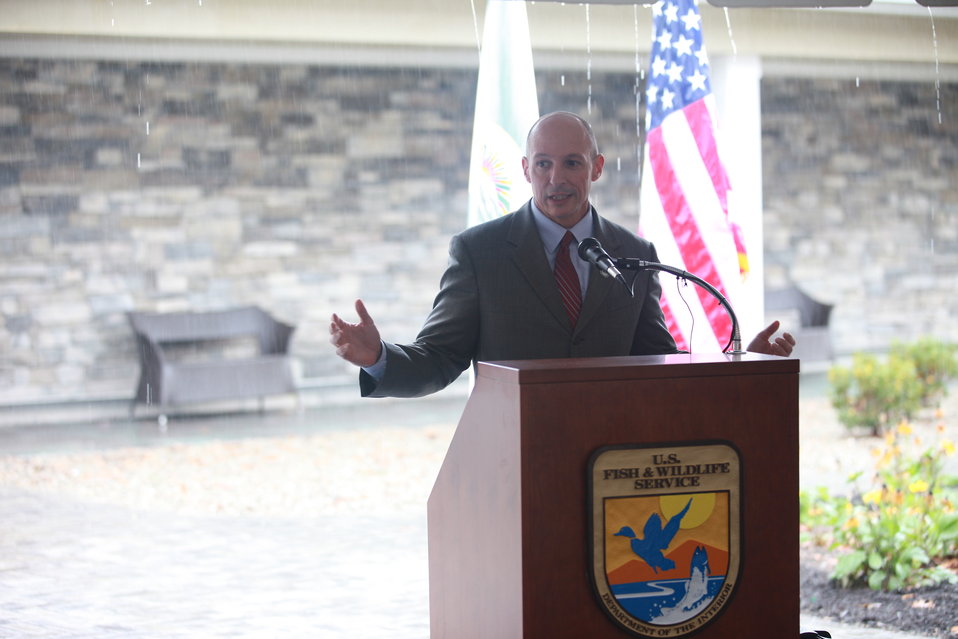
NY Assemblyman Dean Murray

Dean Murray, New York Assemblyman, 3rd Assembly District speaks at the Long Island National Wildlife Refuge Visitor Center Ribbon Cutting ceremony. He is interested in promoting the new visitor center on Long Island as part of the 'I Love New York' tourism campaign.